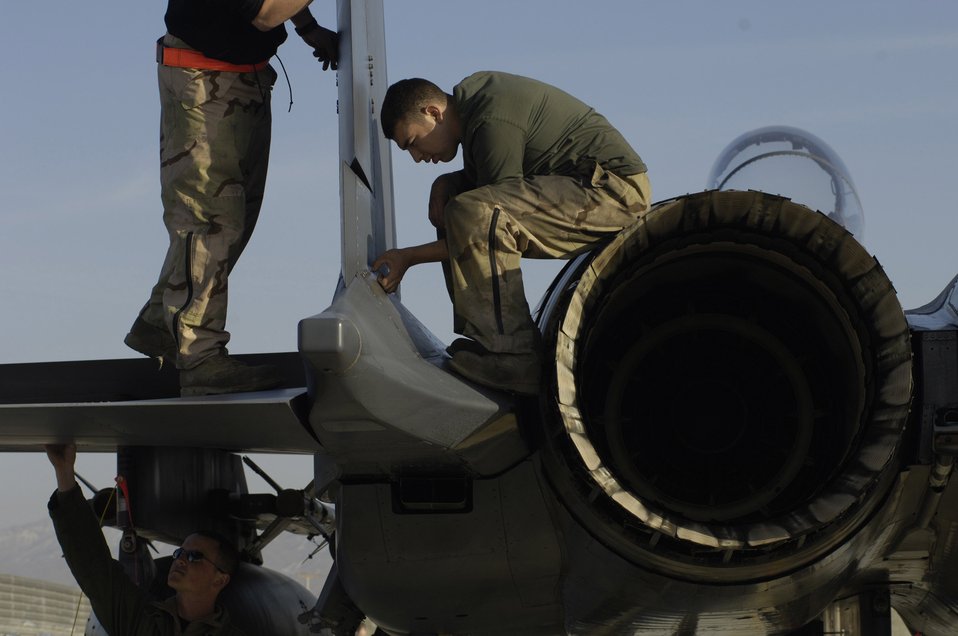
F-15 Strike Eagles take over close-air-support mission at Bagram

Airmen 1st Class David Muench and Bryen Sandoval perform a post-flight inspection on an F-15 Strike Eagle jet at Bagram Air Base, Afghanistan, in support of Operation Enduring Freedom.